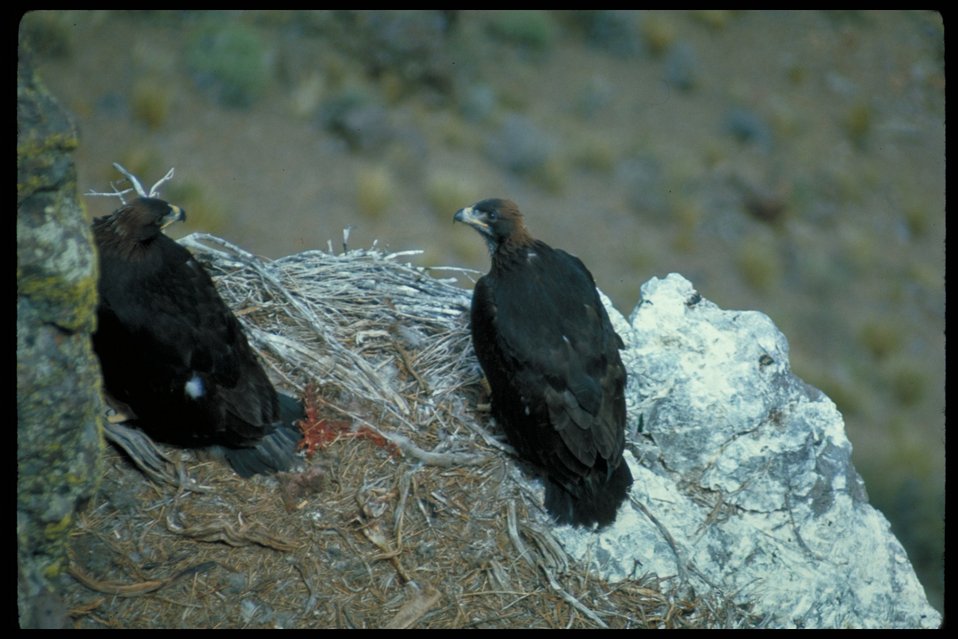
Eagles in nest Birds of Prey National Conservation Area BOP Owyhee Field Office LSRD Lower Snake River District